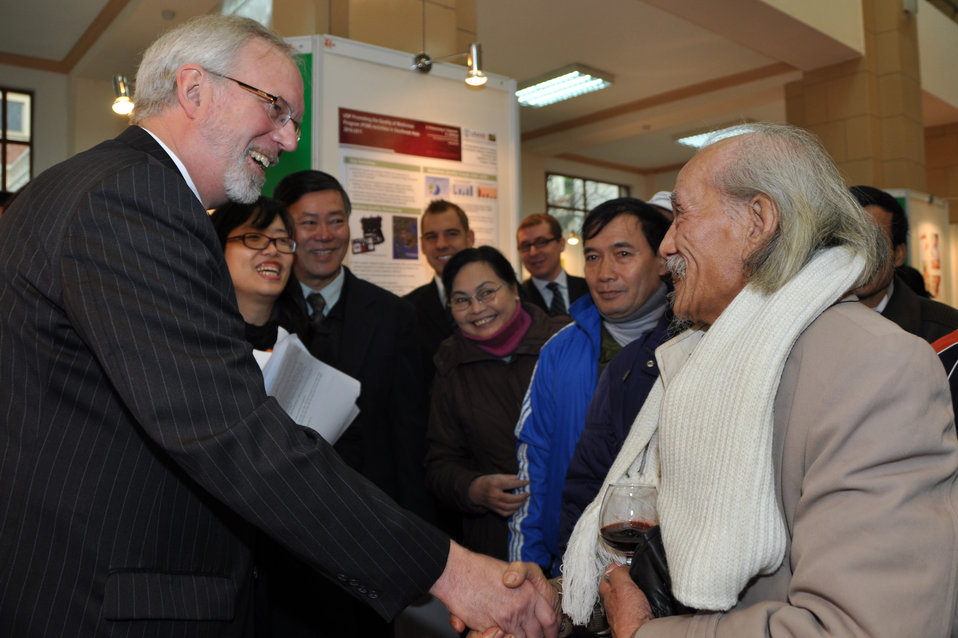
U.S. Ambassador David Shear opens safe medicine exhibition in Hanoi

Safe Medicine Exhibition